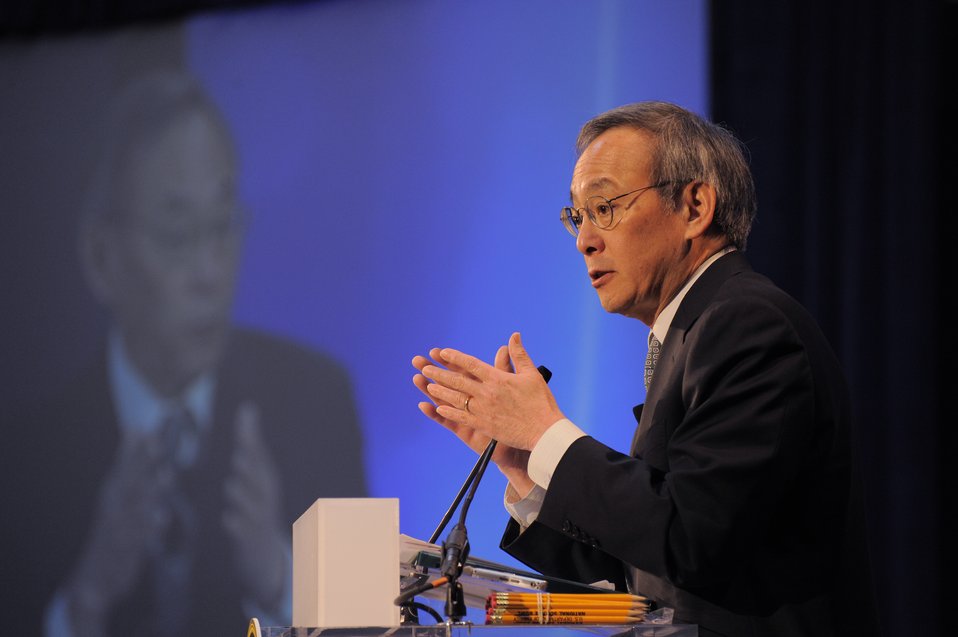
Secretary of Energy Steven Chu addresses students during the 2012 National Science Bowl in Washington, DC on April 30, 2012.

DOE created the National Science Bowl in 1991 to encourage students to excel in mathematics and sciences and to pursue careers in these fields. The department supports mathematics and science education to help provide a technically trained and diverse workforce for the nation. More than 2000,000 students have participated in the National Sciences Bowl throughout its history.